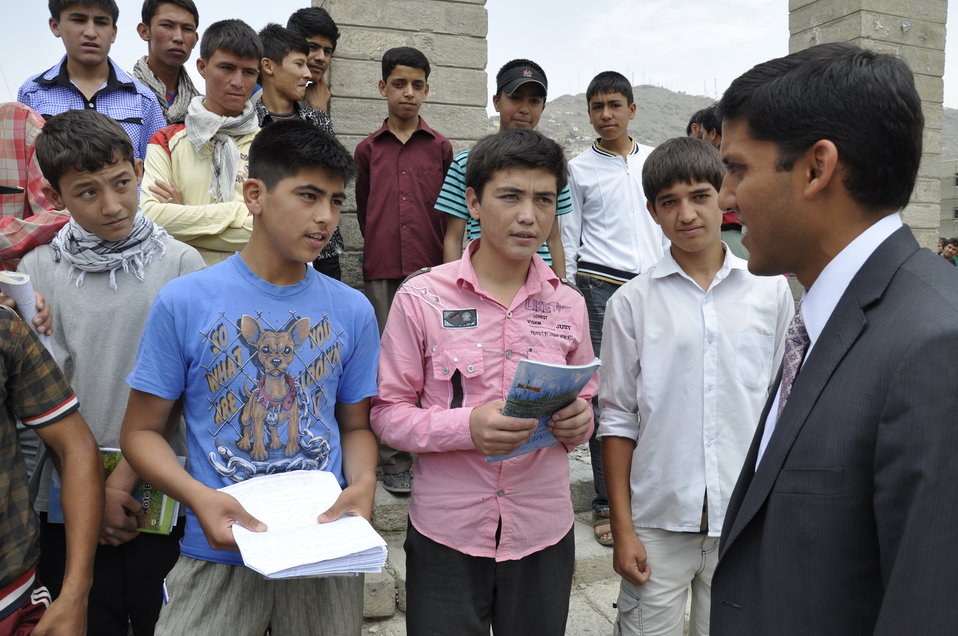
Ghazni High School in Kabul